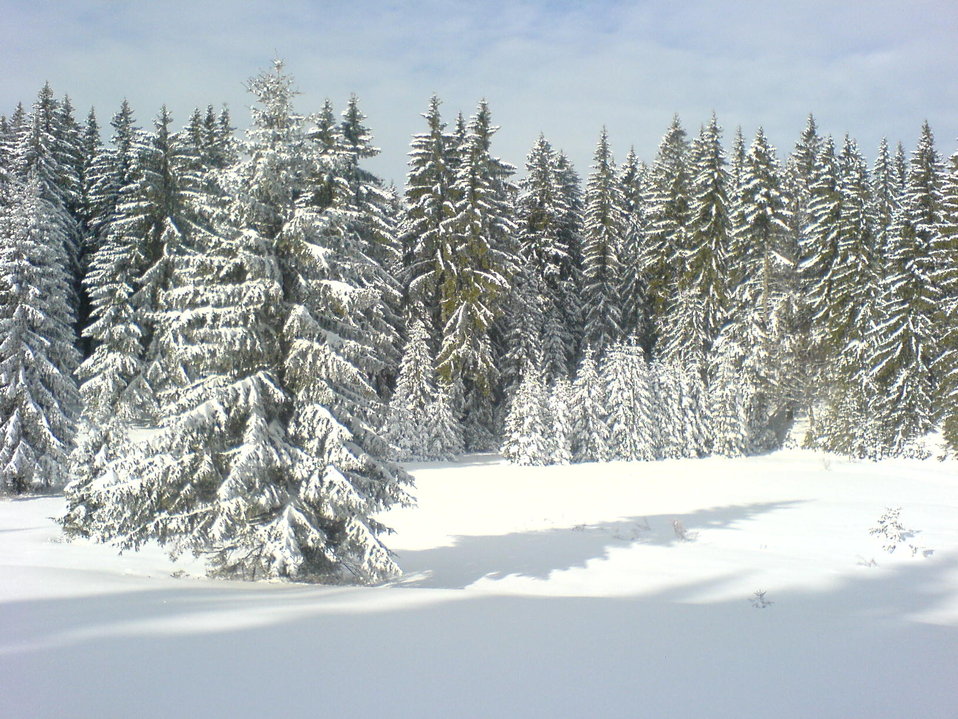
Српски / srpski: Daićko jezero pod snegom, M. Mikaric, 06.01.2007